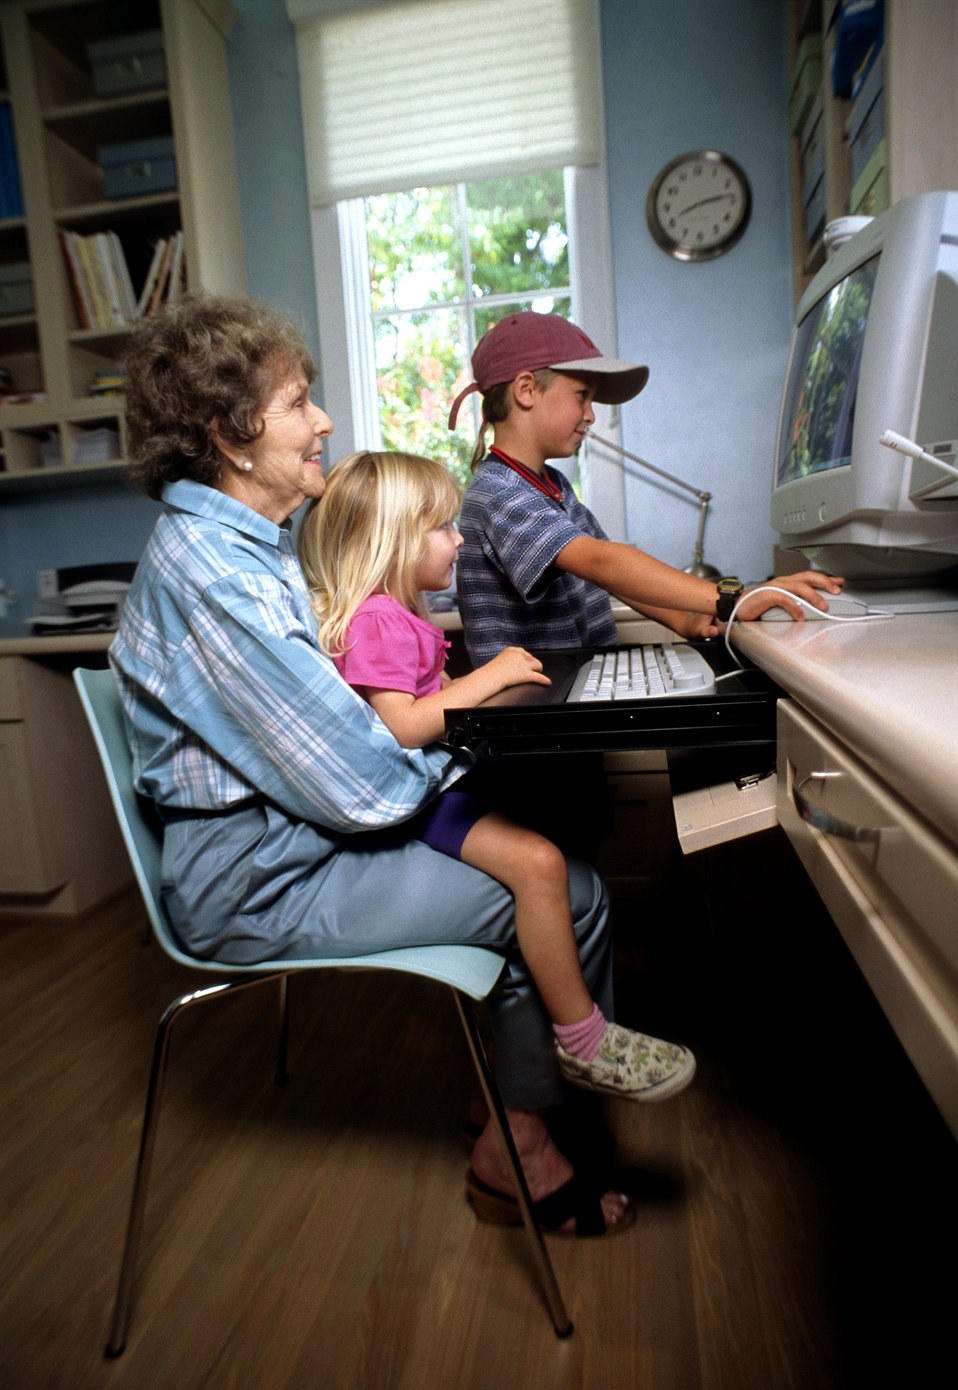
This 2000 image depicted an elderly woman seated at a home computer workstation, while her two grandchildren, a young girl and boy play on the computer with the girl seated on the grandmother's lap. The inclusion of the elderly woman, and the two children showed that by carefully planning a layout and storage design, this in-home office was arranged in order to conveniently accommodate a wide range of users. The work counter accommodated different types of seated users and age groups. Also, the children's presence showed this to be an example of how good design could facilitate intergenerational interaction.